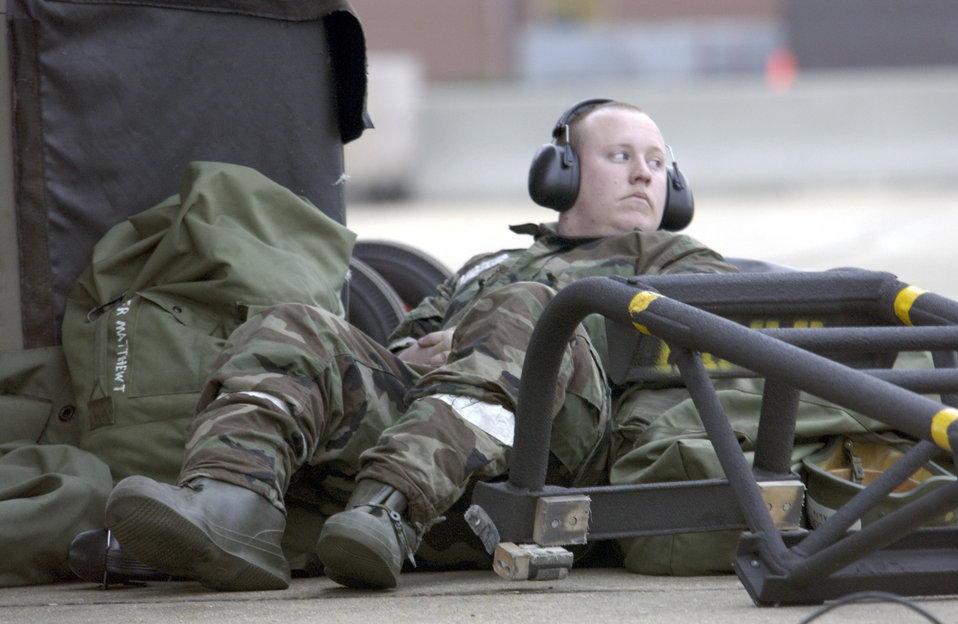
Laid back

LANGLEY AIR FORCE BASE, Va. -- Airman 1st Class Andrew Lederer takes a break during an exercise here, Feb. 24. Airman Lederer is an electrician specialist from the 27th Fighter Squadron here.